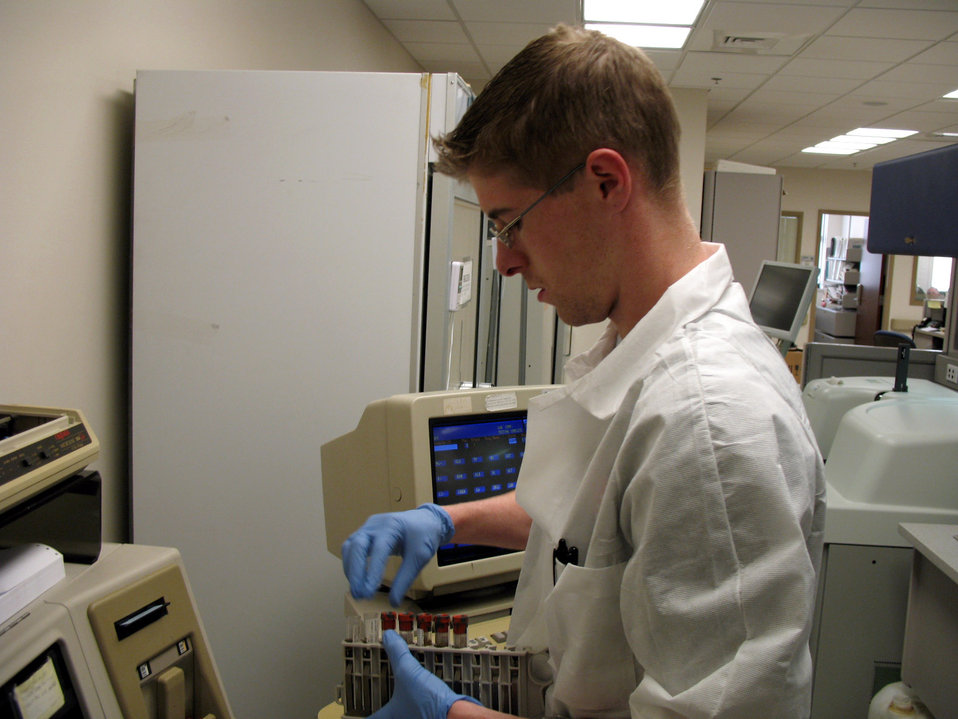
Aviano undergoes blood bank inspection

Senior Airman Curtis Reando checks blood samples at Aviano Air Base, Italy. Airman Reando is a lab technician with the 31st Medical Operations Group.